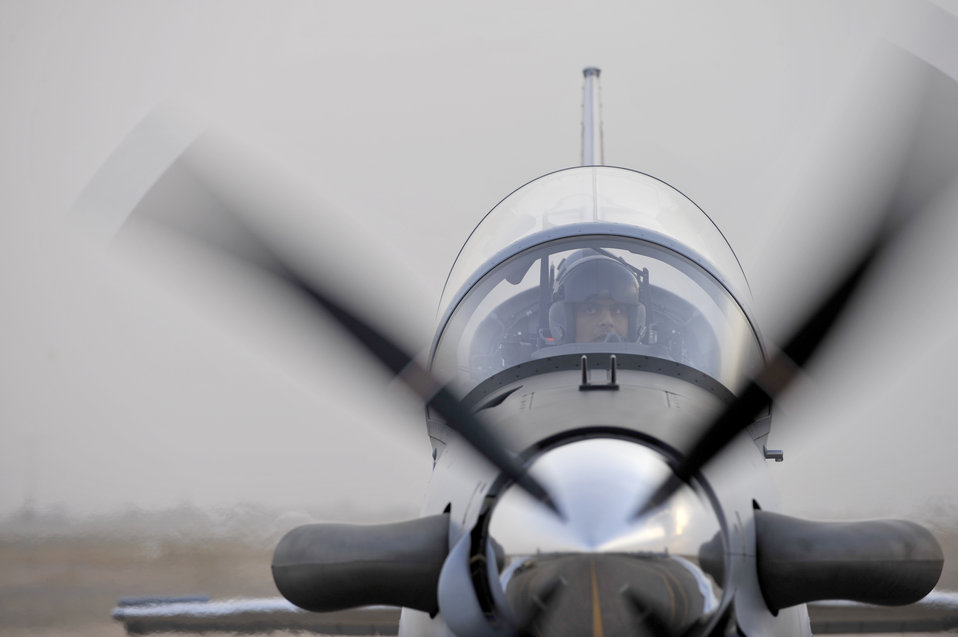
Iraqi air force pilots train with T-6A

An Iraqi air force student pilot prepares to taxi during a training mission Sept. 26, 2010, at Tikrit Air Base, Iraq. U.S. Air Force instructor pilots are training and advising the first group of Iraqi air force instructor pilots on the T-6A Texan II as part of the advice, train, assist, and equip mission of Operation New Dawn.